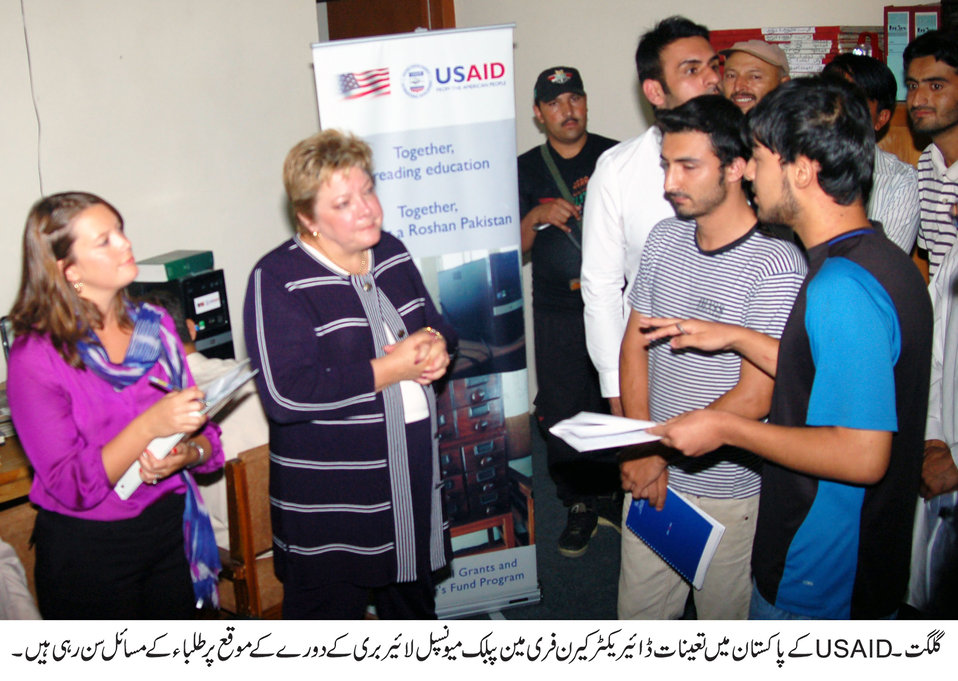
Deputy Director Karen Freeman’s visit to Gilgit Library

Karen Freeman visited the Municipal Gilgit Library on Monday, July 9. She was accompanied by other USAID staff and the staff from the Ambassador’s Fund Program. A the library, she met with Deputy Commissioner of Gilgit, Mr. Arqam and library staff, toured a photo display, and had an informal discussion with the library staff and community members about the USAID-funded project. Library staff showed the equipment funded by USAID (computers, internet, scanners, etc). The visit concluded by a Q & A session with media.